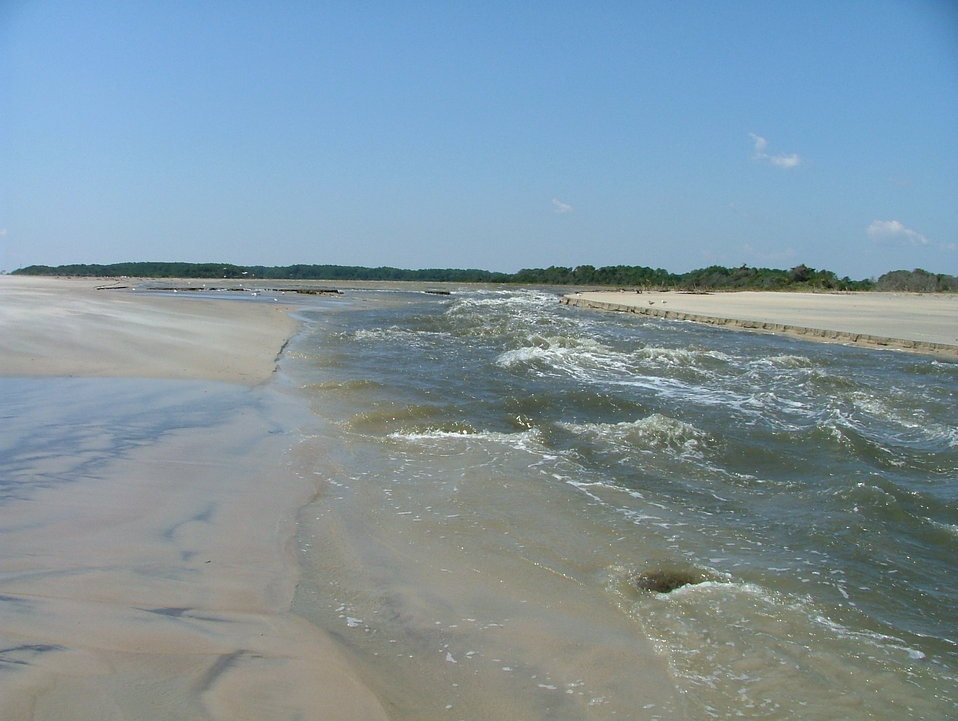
Breach at Swans Cove

Breach caused by Hurricane Irene at Swans Cove at Chincoteague National Wildlife Refuge in Virginia.